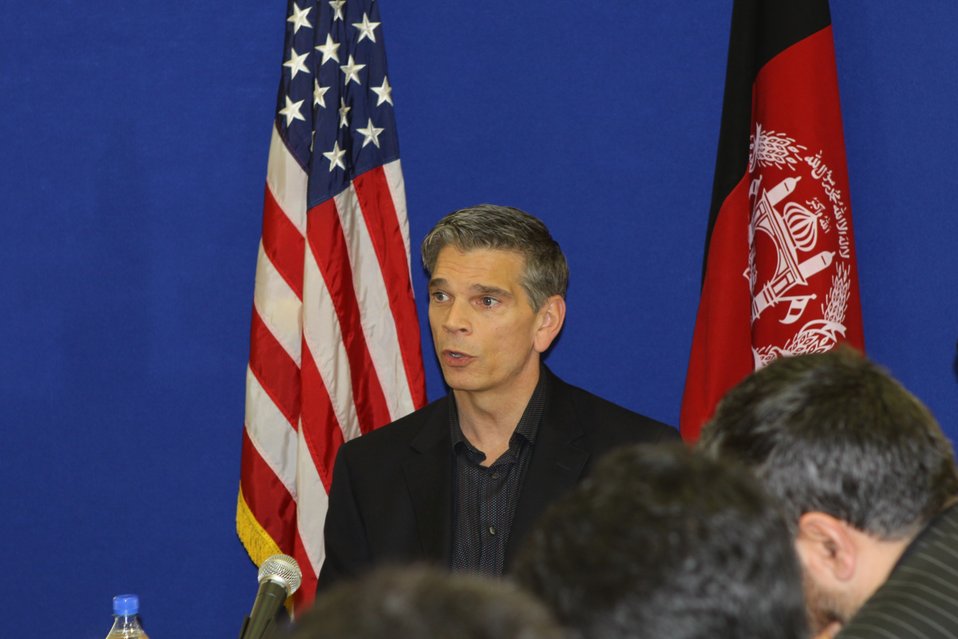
USAID Mission Director Earl Gast Conducts a Media Roundtable with Afghan Media, March 17, 2011